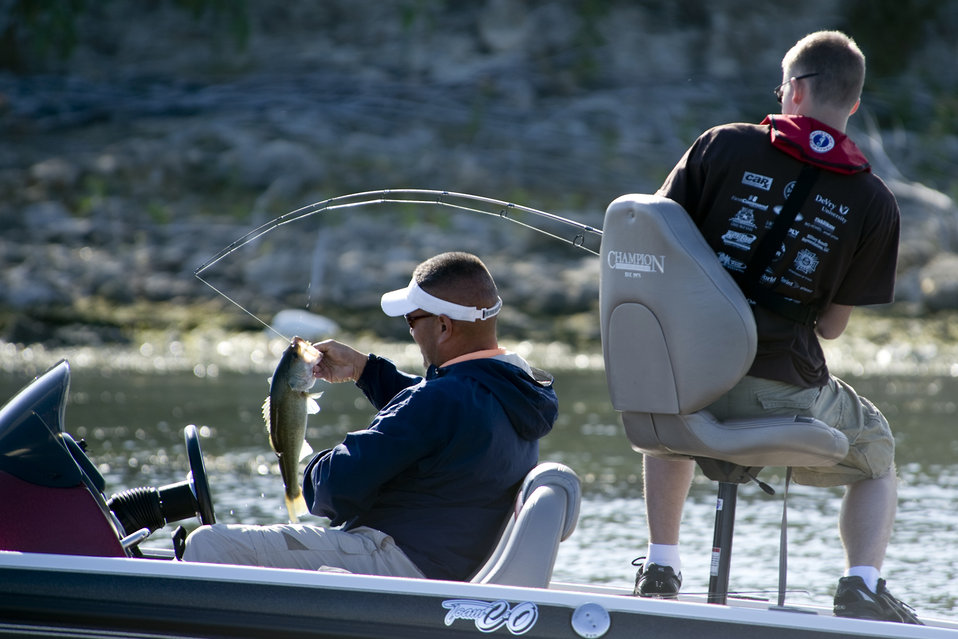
Warrior Care: Injured servicemembers go fishing

Tech. Sgt Chuck Bunch (left) retrieves a bass caught by Senior Airman Marcus Creason during Fishing for Freedom V held Oct. 25 at Choke Canyon, Texas. Thirty-three injured servicemembers participated in the event. Sergeant Bunch and Airman Creason finished the competition with their largest fish weighing 3 pounds, 1 ounce.